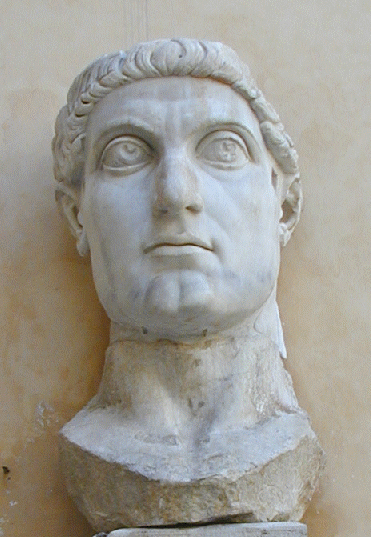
Campitelli - 010218 campidoglio cortile dei conservatori